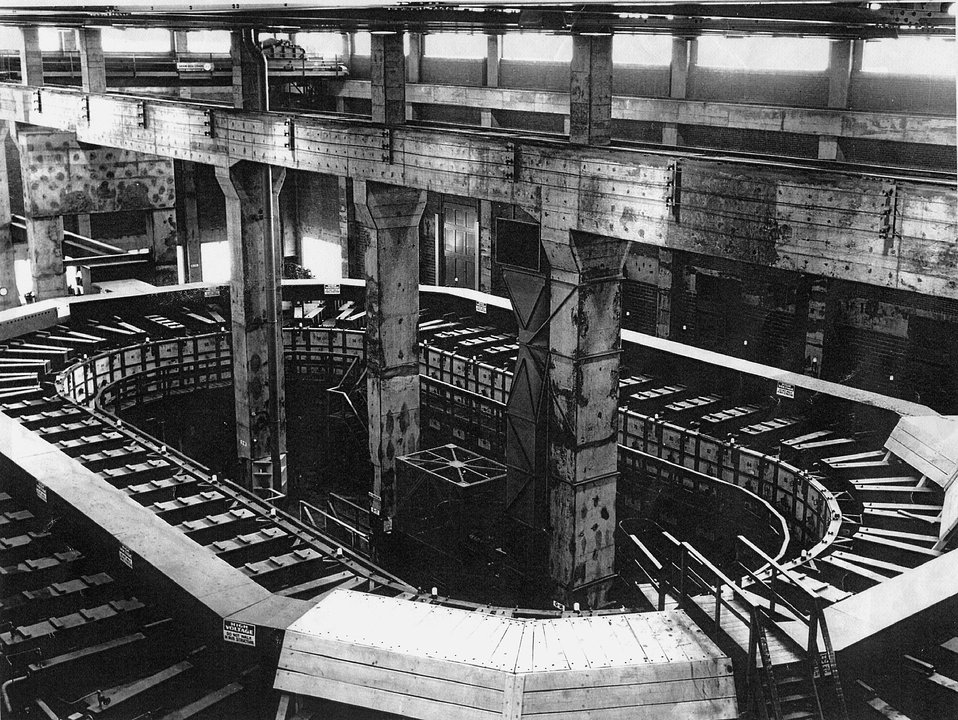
Y-12 Alpha Racetrack. c. undated